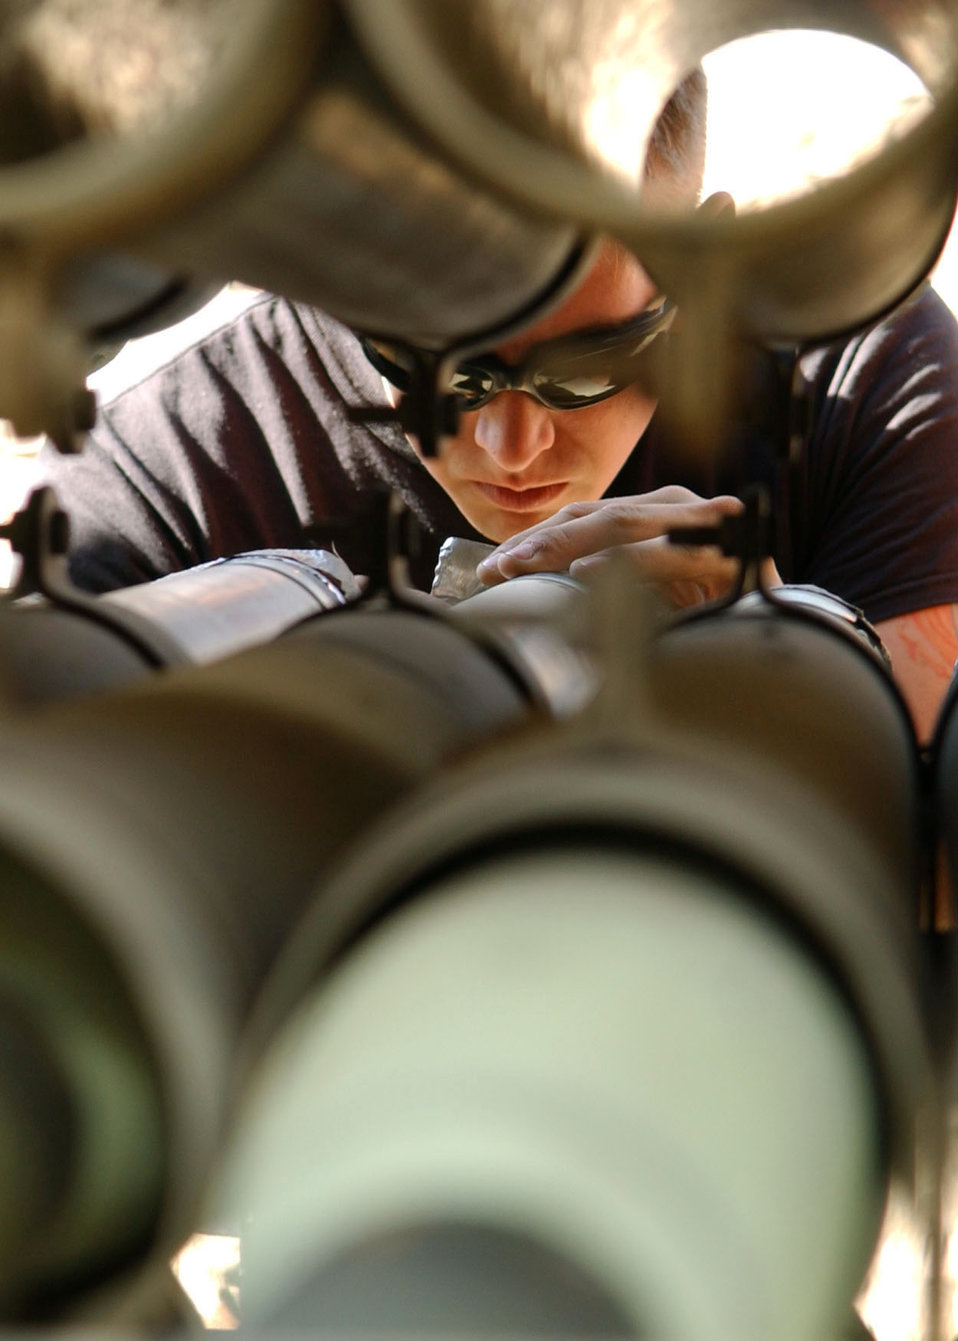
Bagram Airmen build bombs for better tomorrow

BAGRAM AIR BASE, Afghanistan -- Senior Airman Alton Bearden inspects rocket motor igniters for holes in the aluminum foil covering. Sometimes they get punctured during handling. The active-duty 455th Expeditionary Aircraft Maintenance Squadron Ammunitions Unit conventional maintenance crewmember is deployed to Afghanistan from Spangdahlem Air Base, Germany.